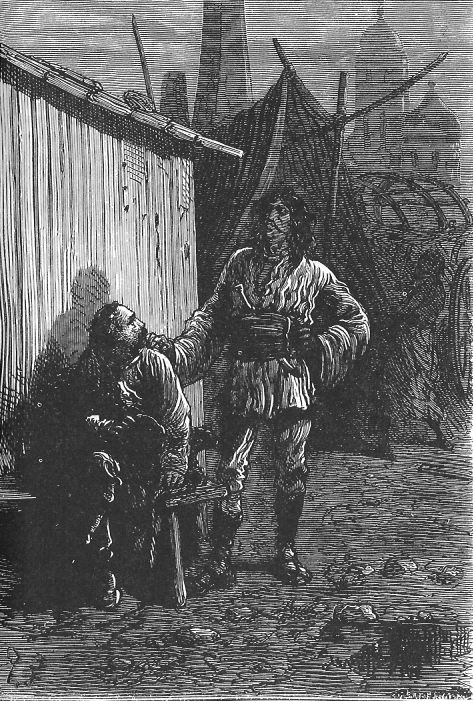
An illustration from the novel 'Michael Strogoff: The Courier of the Czar' by Jules Verne drawn by Jules Férat. Polski: Ilustracja powieści Juliusza Verne'a 'Michał Strogow, kurier carski' autorstwa Julesa Férata. Français : 'Michel Strogoff. Le courier du tzar', Jules Férat. Français : « Qu’est-ce que tu fais là ? »